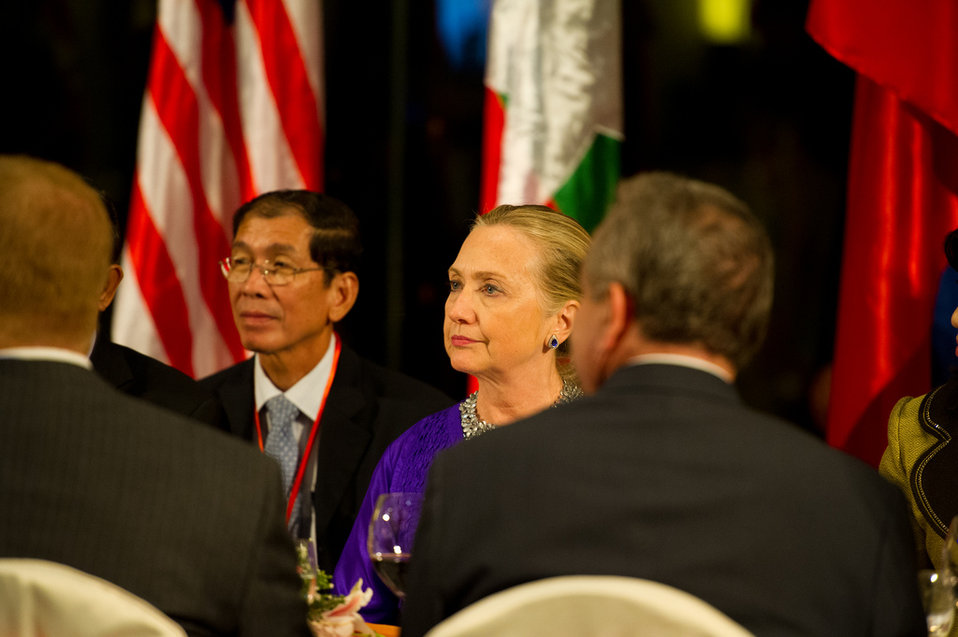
Secretary Clinton at the U.S.-ASEAN Business Forum and Dinner

U.S. Secretary of State Hillary Rodham Clinton participates in the U.S.-ASEAN Business Forum and Dinner in Siem Reap, Cambodia, on July 13, 2012.